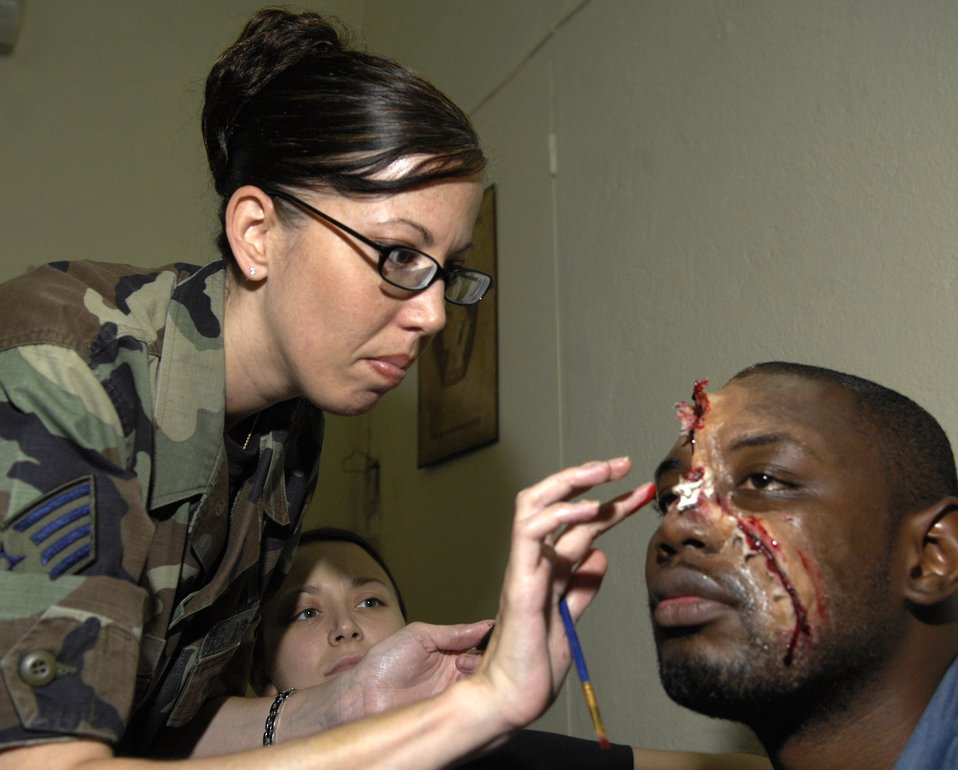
Malians learn life-saving medical techniques

Staff Sgt. Michelle Linn applies moulage make-up to Mohamed Diawara, a Malian translator, during MEDFLAG 08, July 15. More than 90 servicemembers deployed to Bamako for MEDFLAG 08, a multi-national medical training exercise designed to enhance medical capabilities and readiness for U.S. and African Forces. Sergeant Linn is deployed from the 48th Medical Group at Royal Air Force Lakenheath, England.